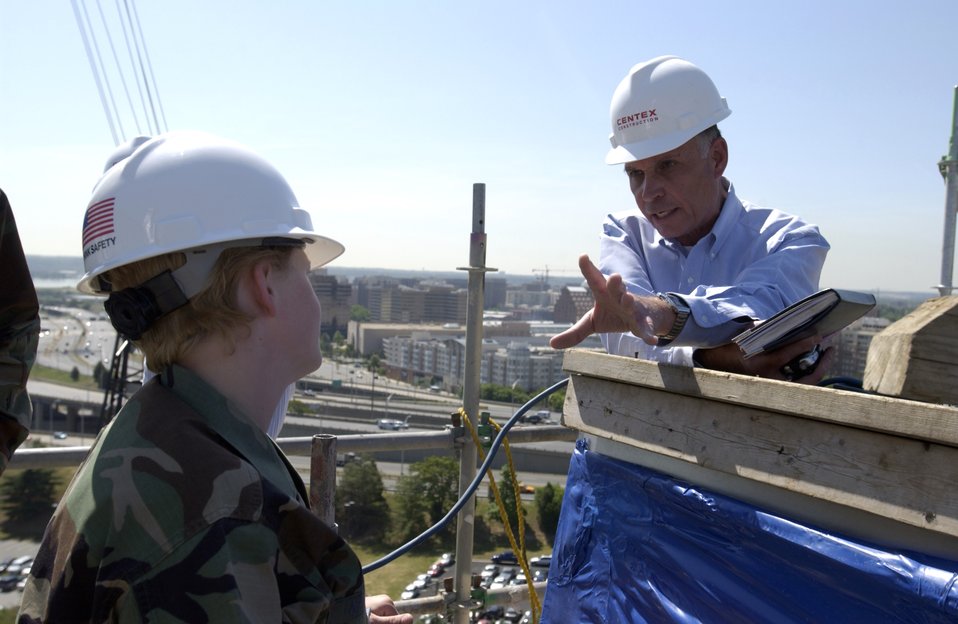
Air Force Memorial progress 'wows' Airmen

Retired Maj. Gen. Edward F. Grillo Jr. talks with Staff Sgt. Paula Newman about the new Air Force Memorial from atop the scaffolding surrounding one of the memorial's spires. Three spires will represent the Air Force core values. The memorial is scheduled for completion in October. General Grillo is president of the Air Force Memorial Foundation. Sergeant Newman is assigned to the 11th Logistics Readiness Squadron at Bolling Air Force Base in Washington, D. C.